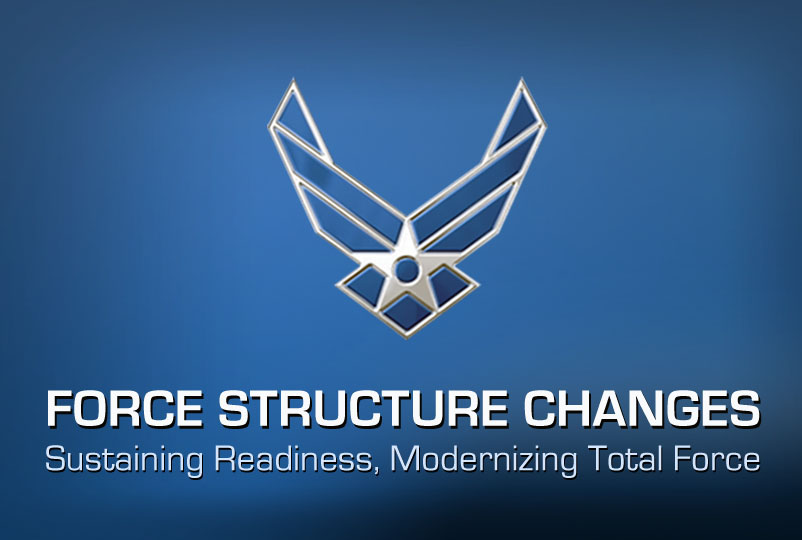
AF structure overview